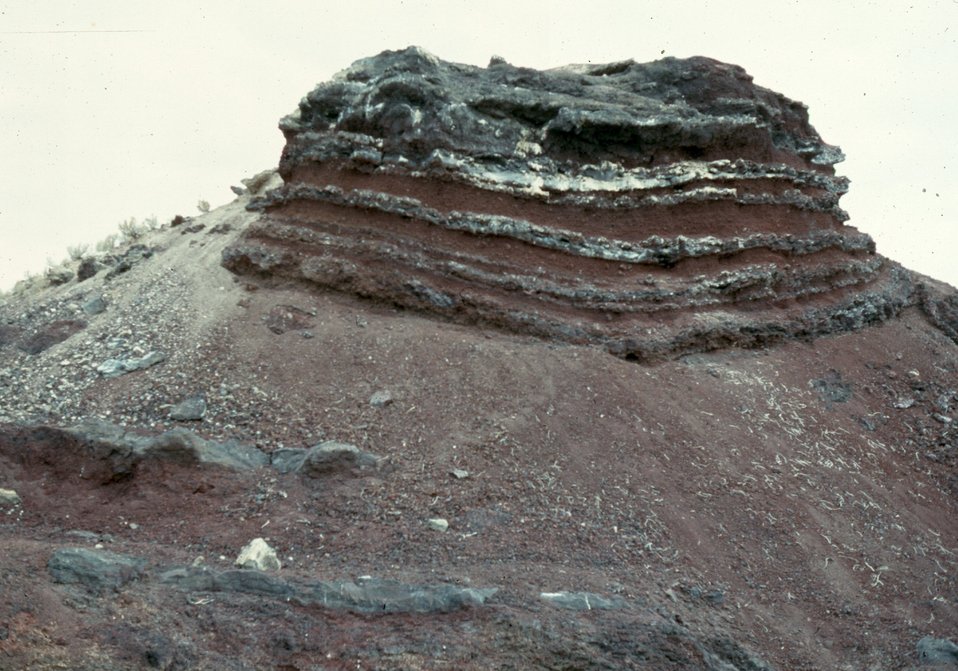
Cinder cone composite layering Shoshone Field Office USRD Upper Snake River District